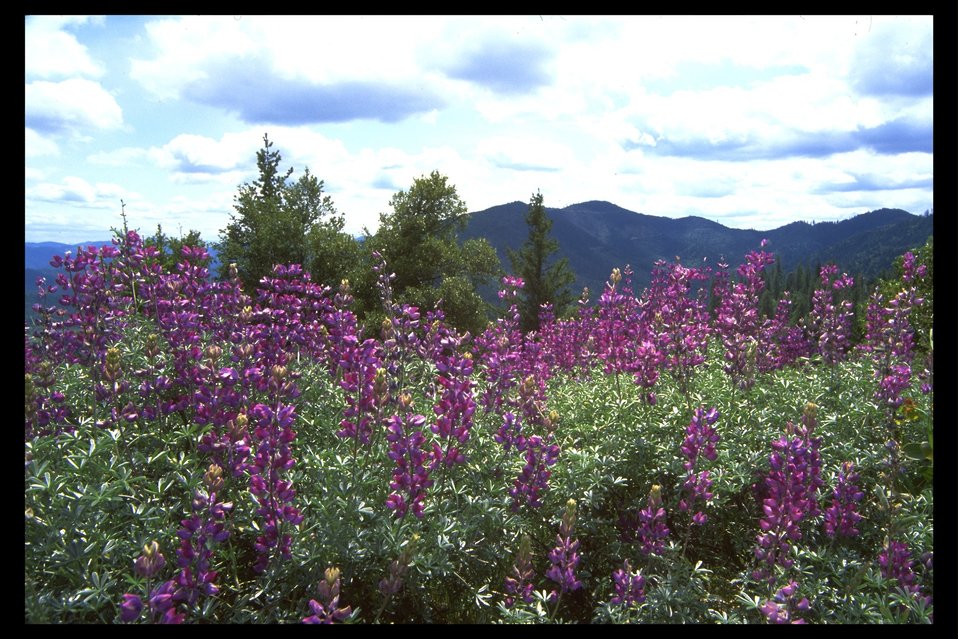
Lupine found along the roadside on Fielder Mountain near the Rogue River.